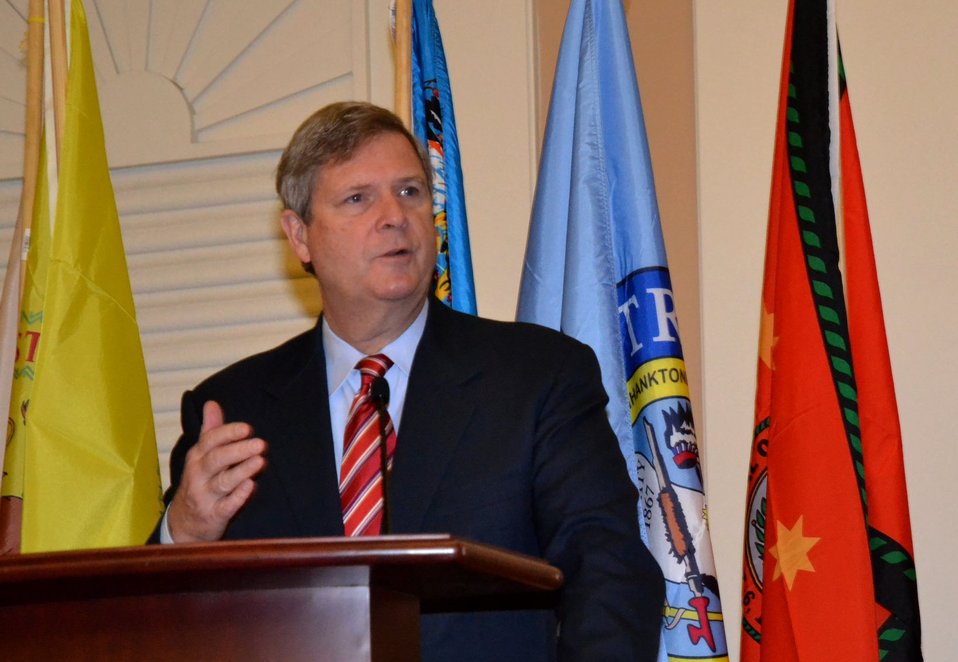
Agriculture Secretary Tom Vilsack delivers remarks at the keynote speaker at the Indian Agriculture Symposium, in Las Vegas, NV, on Wednesday, December 7, 2011.